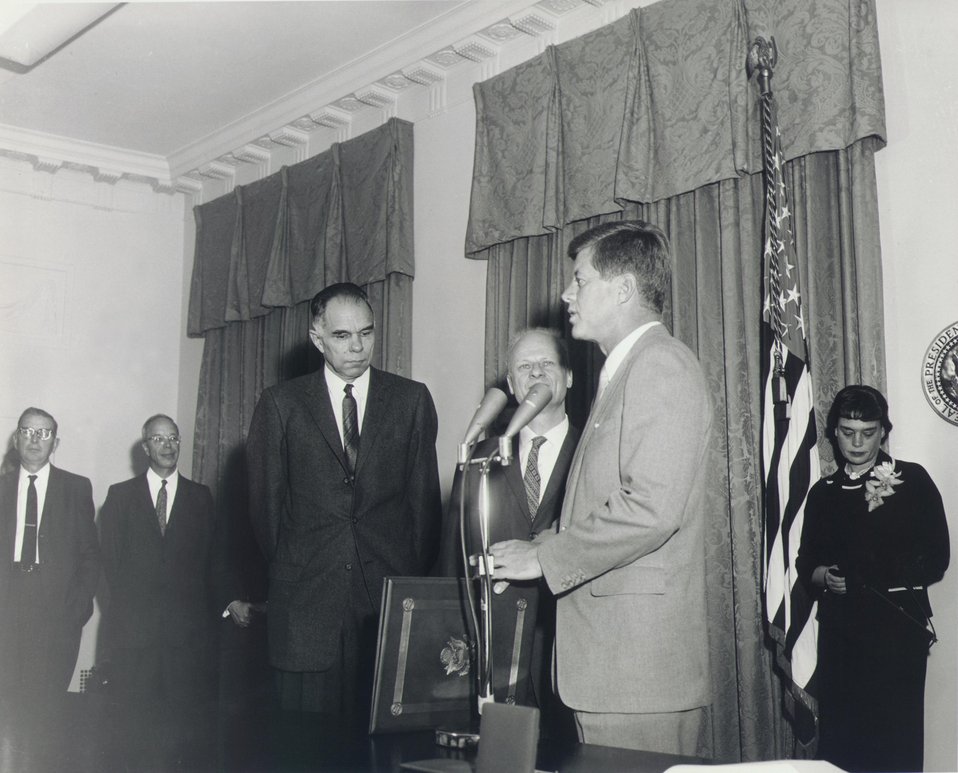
Fermi Award Ceremony luncheon for Dr. Bethe in Washington on Dec. 1, 1961.